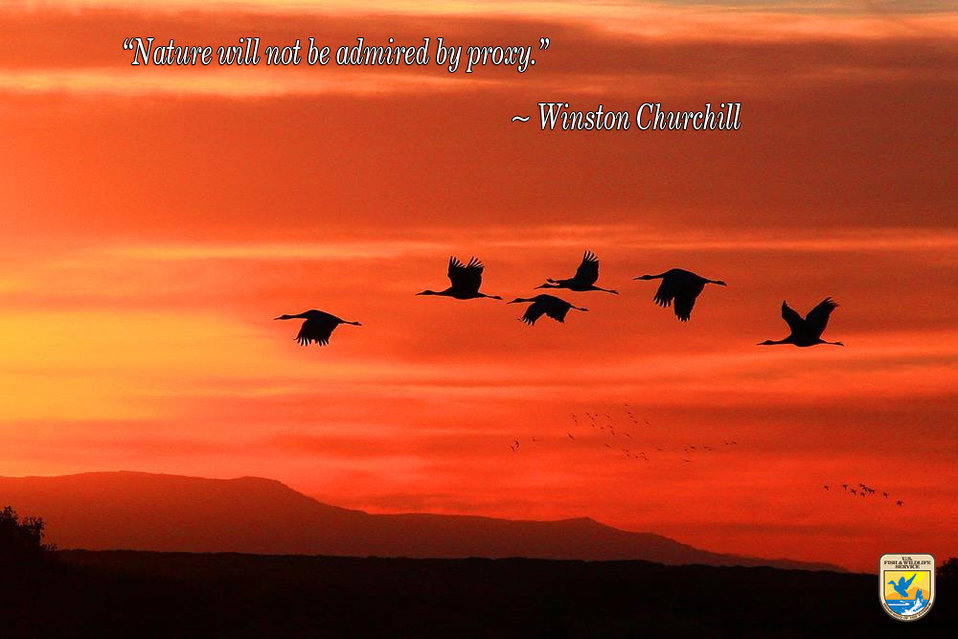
Get Inspired!

Download, share and enjoy! Get inspired with this quote from Winston Churchill.